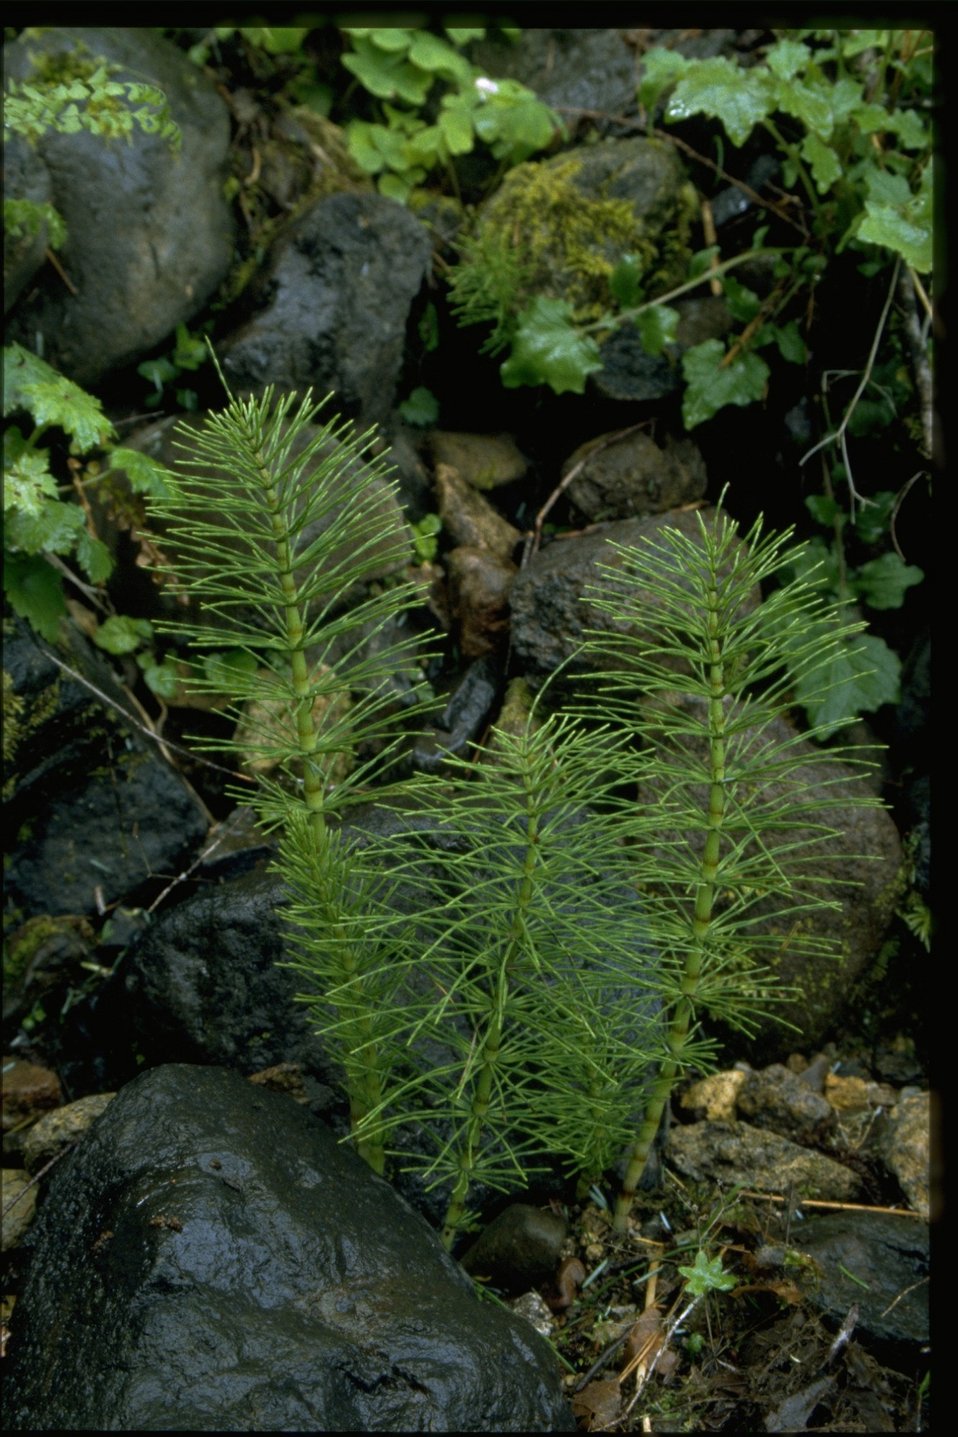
Equisetum arvense.